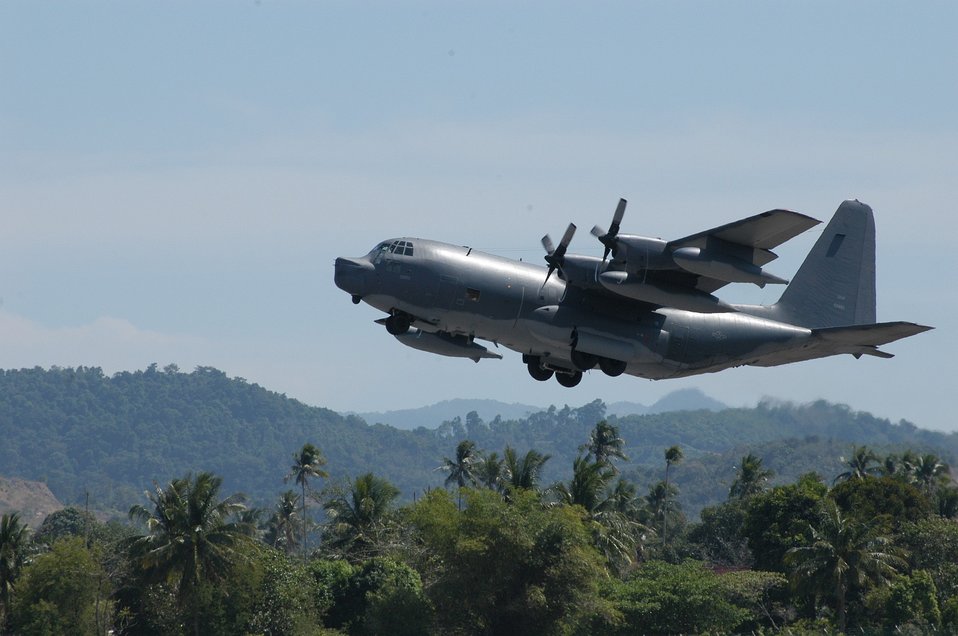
AFSOC unit wraps up Asian aid mission

LANGKAWI, Malaysia -- An MC-130P Combat Shadow from Kadena Air Base, Japan, takes off from here Jan 14. Crews from Kadena's 17th Special Operations Squadron fly into Indonesia daily, shuttling humanitarian relief supplies into Banda Aceh.